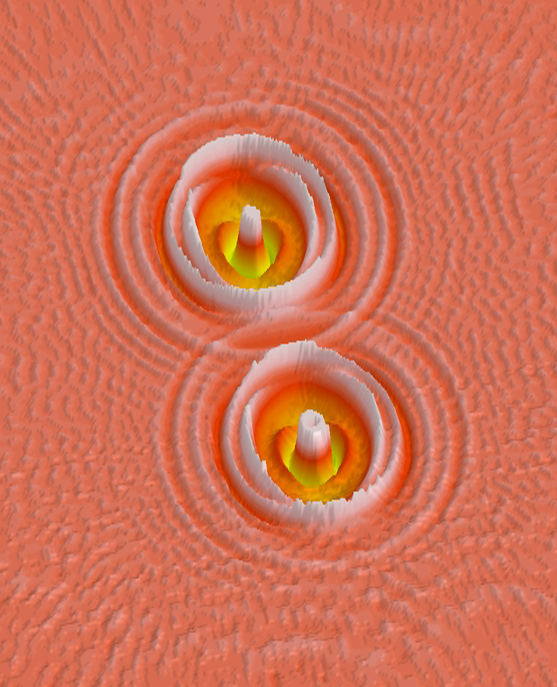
Nano-oscillators

A simulation made with NIST micromagnetic software shows the interaction of 'spin waves' emitted by two nano-oscillators that generate microwave signals. The ability of these tiny spintronic devices to spontaneously synchronize their emissions may lead to smaller, cheaper wireless communications components.